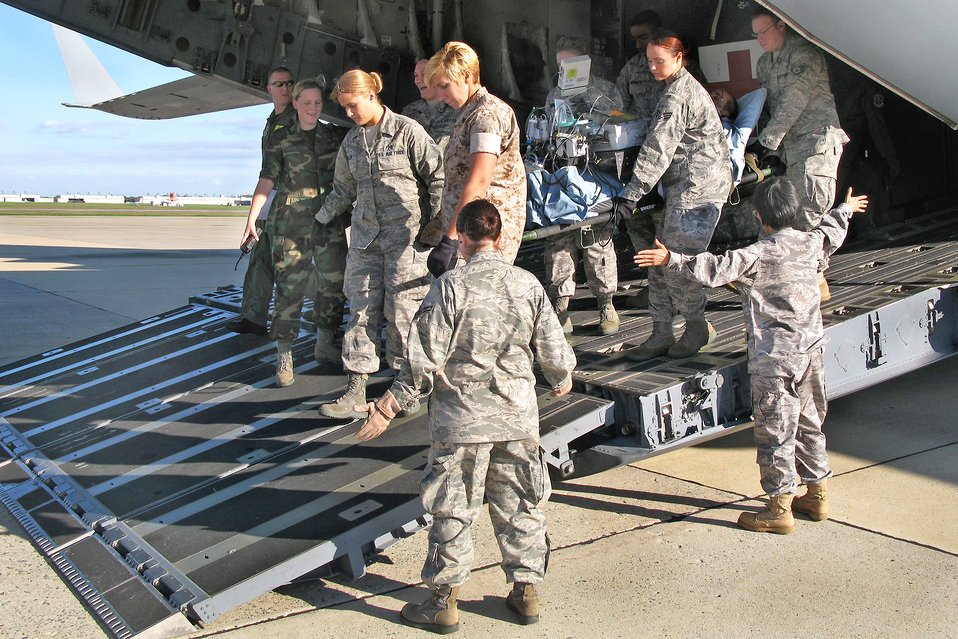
Wounded warriors get heros' welcome at Andrews

Airmen and Marines from the 779th Aeromedical Staging Facility at Andrews Air Force Base, Md., transports a severely wounded Soldier being medically evacuated from Iraq for advanced treatment care at Walter Reed Army Medical Center in Washington.